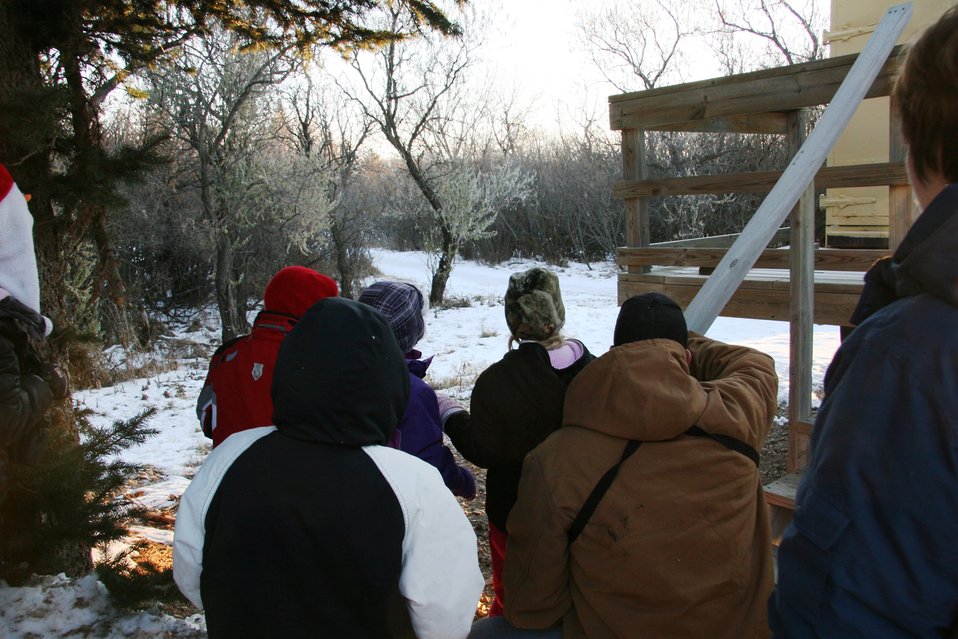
Spotting a Downy Woodpecker

Trying to spot the downy woodpecker one last time.